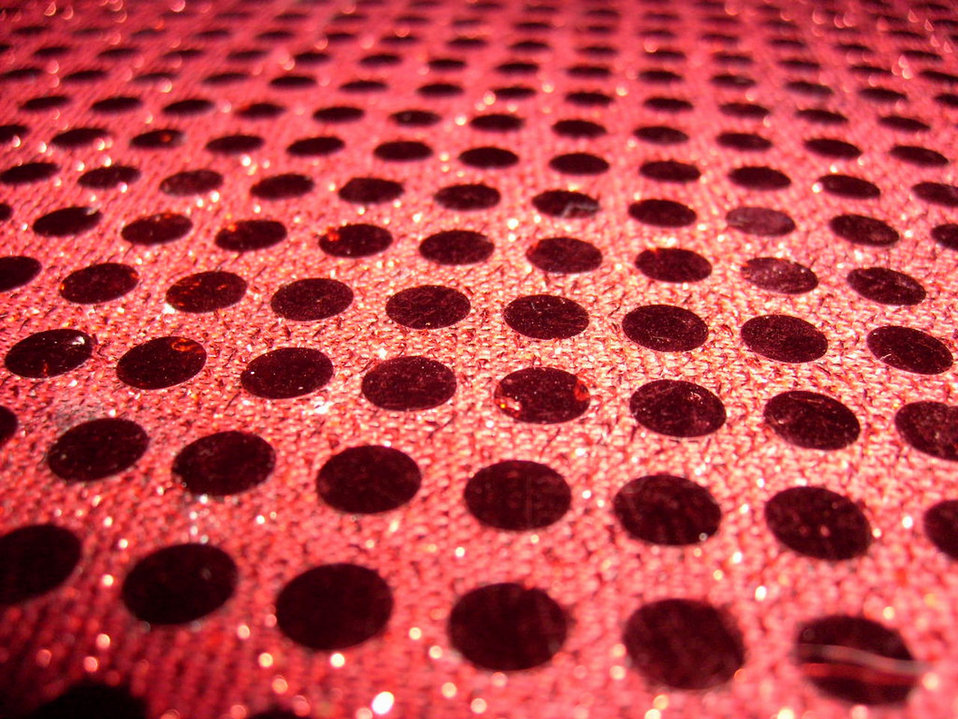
Red dots

Red dot pattern.